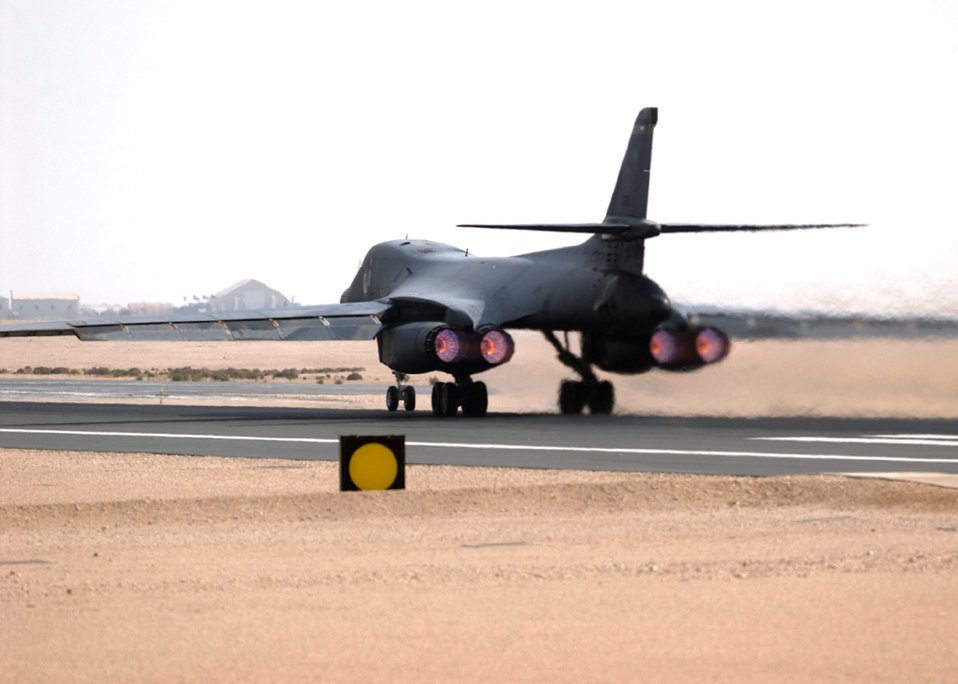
Airpower summary

An Air Force B-1B Lancer takes off from an air base in Southwest Asia. The B-1B flies a wide range of mission in support of Operations Enduring and Iraqi Freedom.